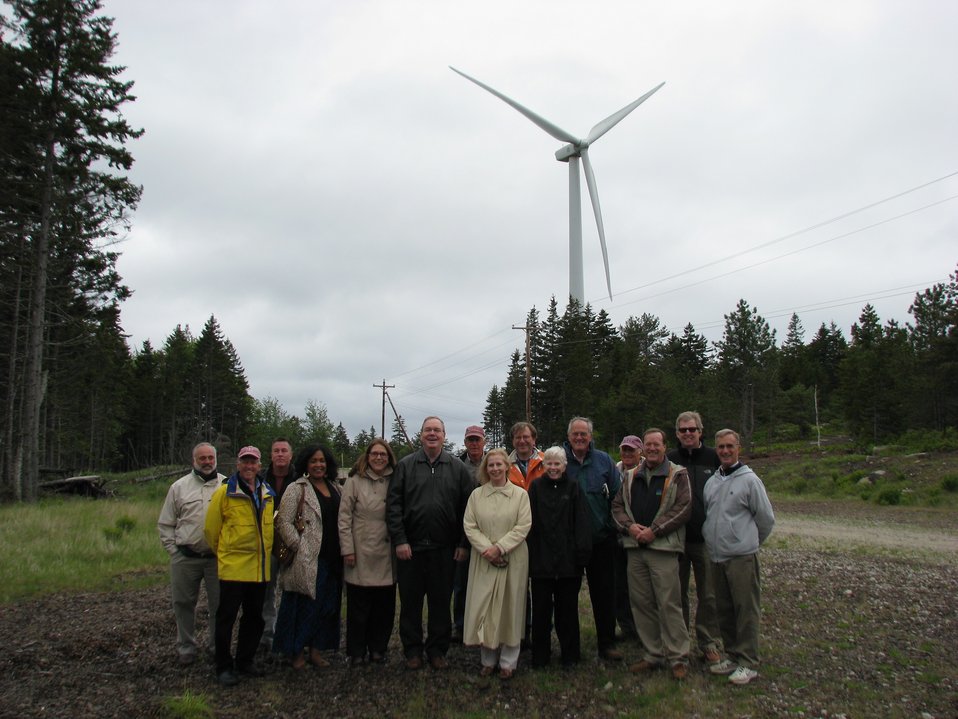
windmill-jpg-06202012

U.S. Department of Agriculture (USDA) and Northeast Region State Directors tour the Fox Islands Wind site at the remote island community of Vinalhaven, ME on June 5, 2012. USDA Rural Development provided funding support for the wind project that meets the power needs of the Fox Islands. The three immense wind turbines will generate between 10 and 10.5 million kilowatt hours per year.